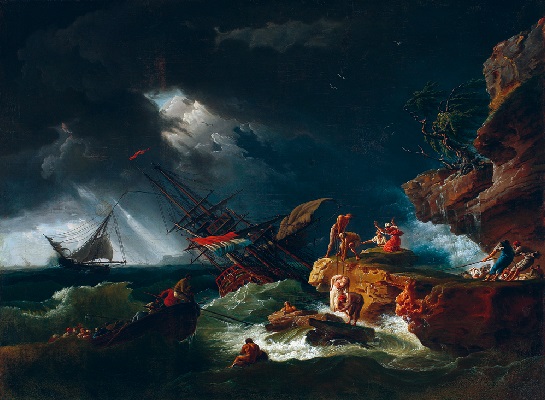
Vernet A storm